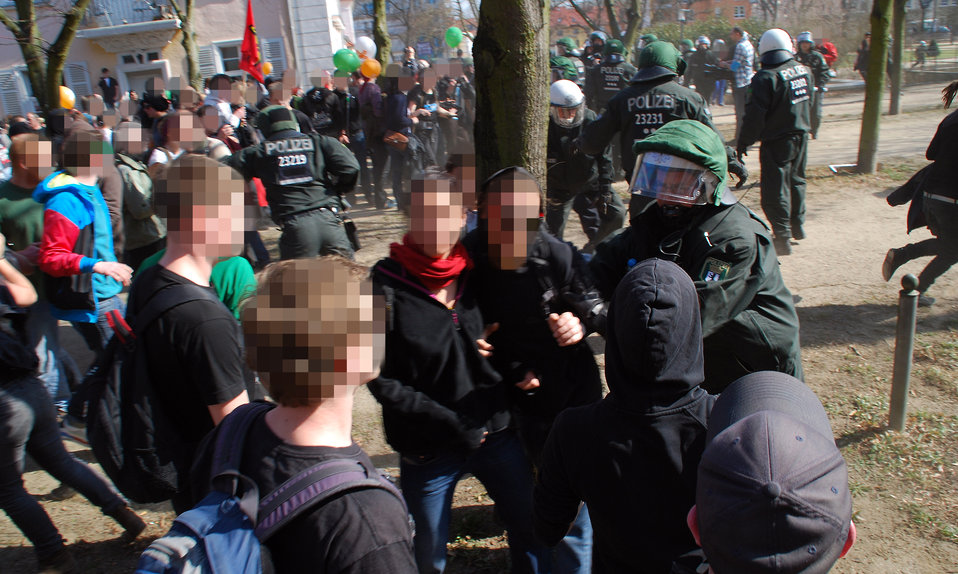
Proteste gegen den Nazi-Aufmarsch am 24.3.2012 in Frankfurt (Oder)